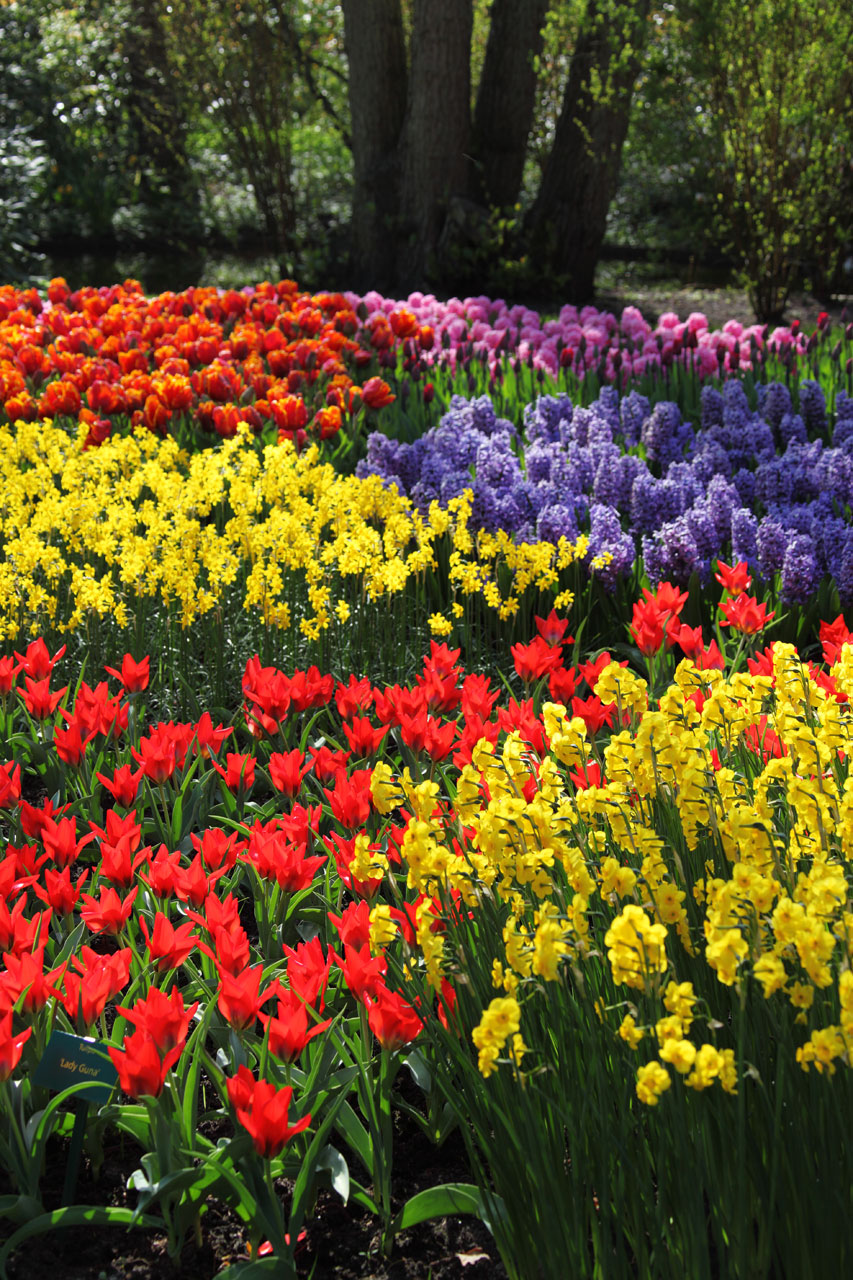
Various colorful flowers

Colorful flower bed.